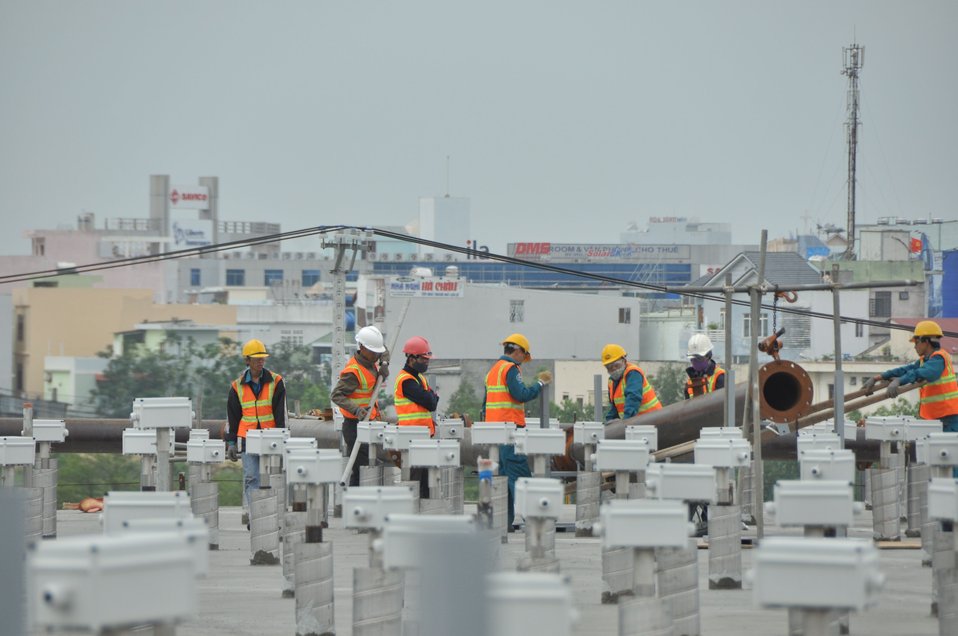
USAID Dioxin Contamination Project Progress: Containment Structure

Progress at the Environmental Remediation of Dioxin Contamination Project at the Danang Airport

December 19, 2013